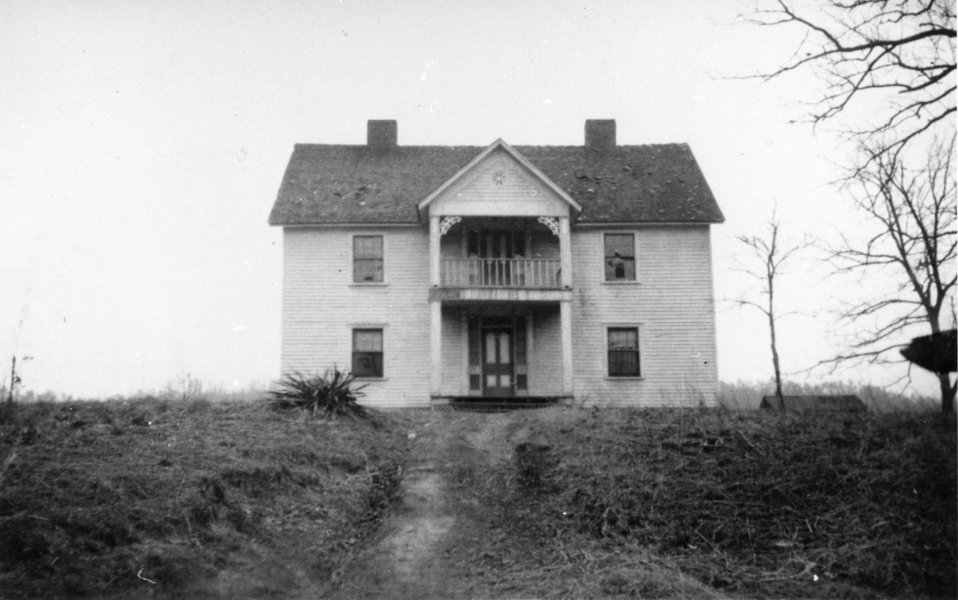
Early settlers at Oak Ridge